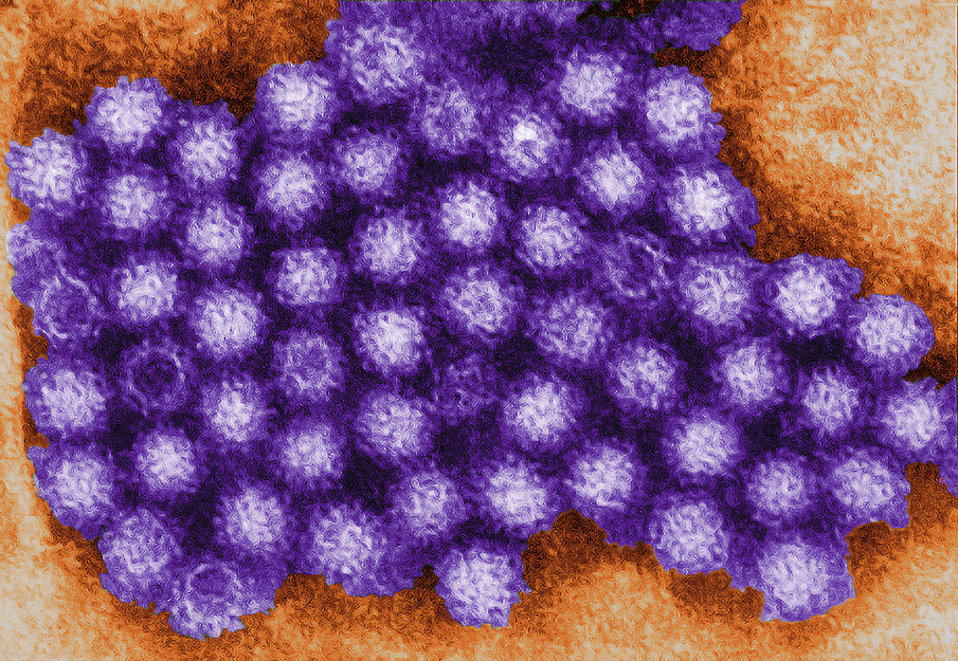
This transmission electron micrograph (TEM) revealed some of the ultrastructural morphology displayed by norovirus virions, or virus particles.